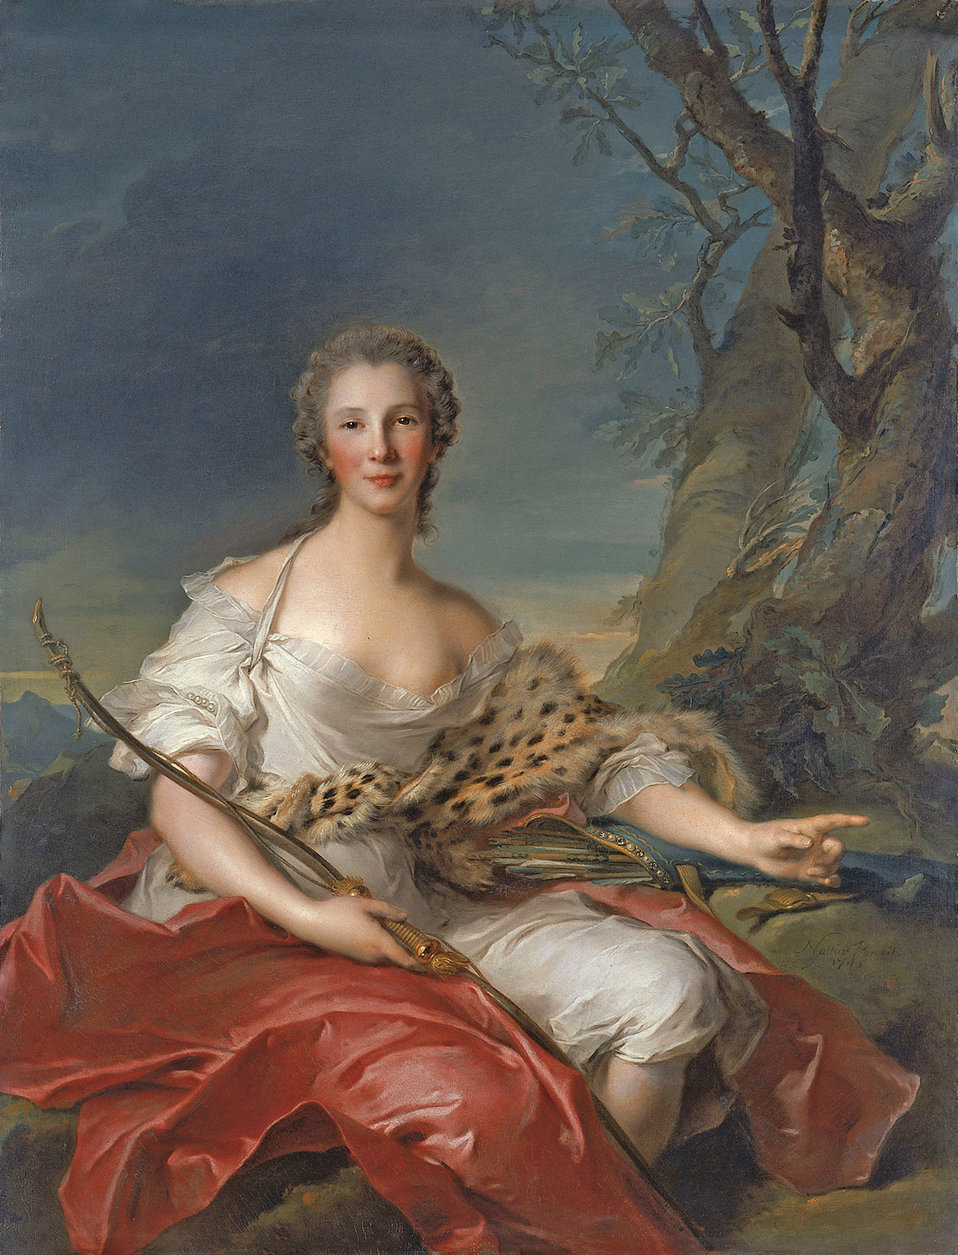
Jean-Marc Nattier, Retrato de Madame Bouret como Diana (1745)